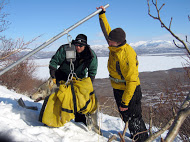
Gray wolf

Scientific name: Canis lupus
Status: Endangered Non-Essential Experimental Population Delisted
Photo credit: USFWS
Wolf data collection